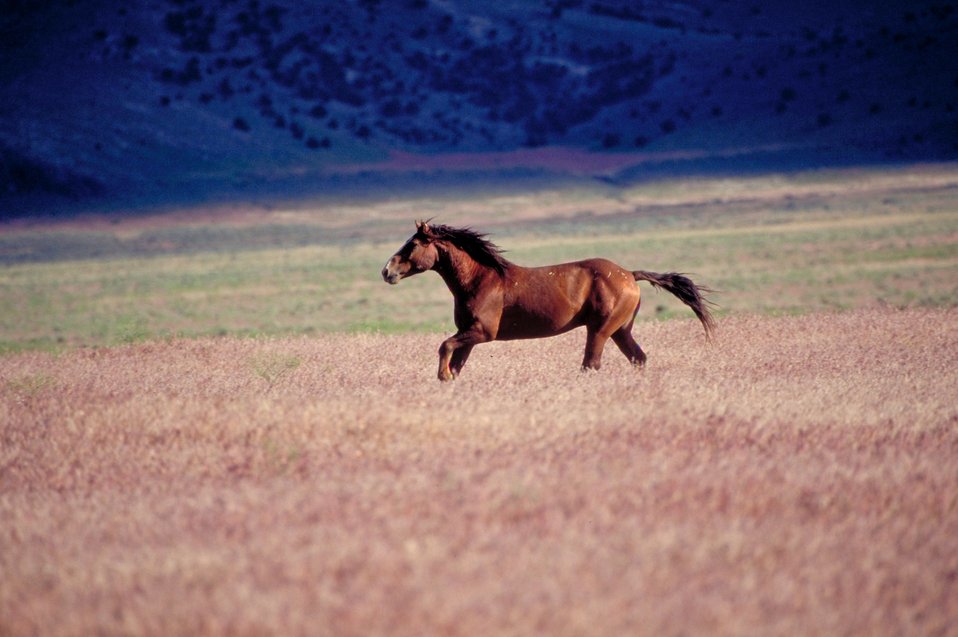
Onaqui Herd near Dugway, Utah.